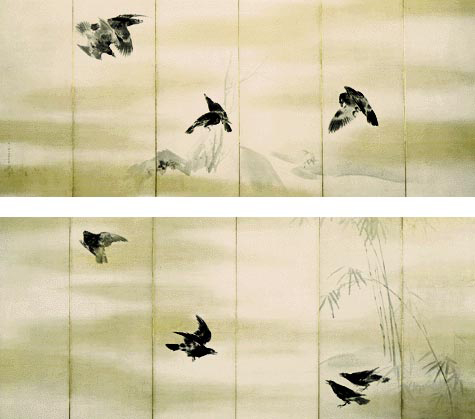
'Crows' by Maruyama Okyo